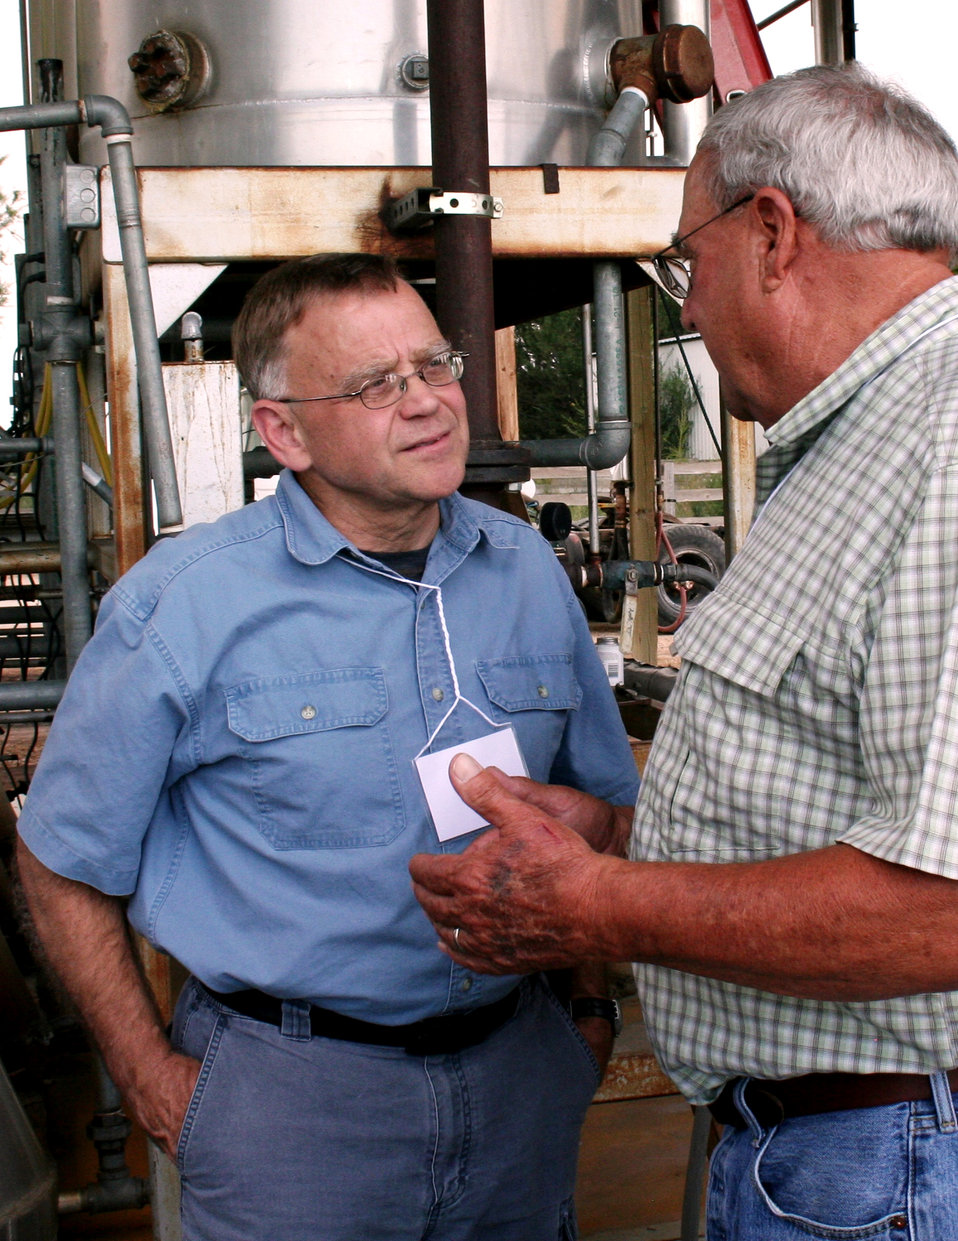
On the Road with Mike Taylor

FDA Deputy Commissioner Michael Taylor (left) talks with Clinton Wissel, farmer and president of the Idaho Onion Growers Association. Mike and colleagues started a five-day tour of the Pacific Northwest on Sunday, Aug. 11, 2013 -- visiting Idaho, Oregon and Washington -- to get a first-hand look at produce production and irrigation operations, and to discuss the proposed Produce Safety Rule with growers, food industry representatives and state officials. For more about Mike's multi-region tour, read these FDA Voice blog posts:

• Hearing the Concerns of Maine Growers Striving for Agricultural Diversity
• On the Road with Mike Taylor: Touring the Pacific Northwest
• On the Road with Mike Taylor, Day 2: Frank Talk in Farm Country
• On the Road with Mike Taylor, Day 3: Families and Partnerships
• On the Road with Mike Taylor, Day 4: Looking to the Future